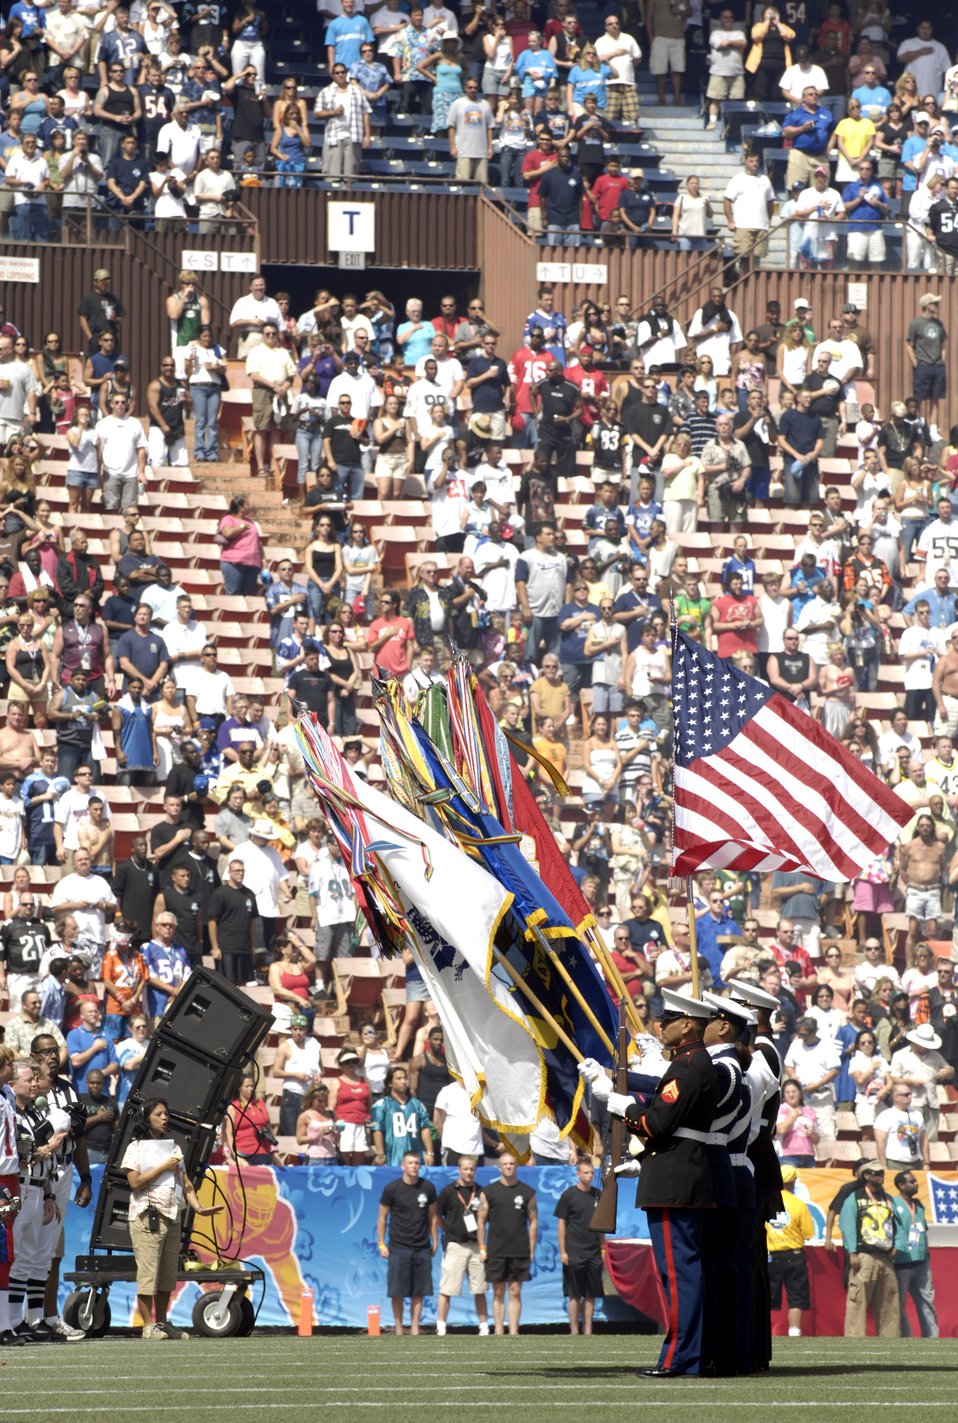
Pro Bowl Airmen

A joint-service honor guard stands at attention during the national anthem at the 2007 Pro Bowl Feb. 10 at Aloha Stadium in Hawaii. Servicemembers from all branches of the U.S. military in Hawaii participated in Pro Bowl activities. The Pro Bowl brings together the top players in the National Football League.